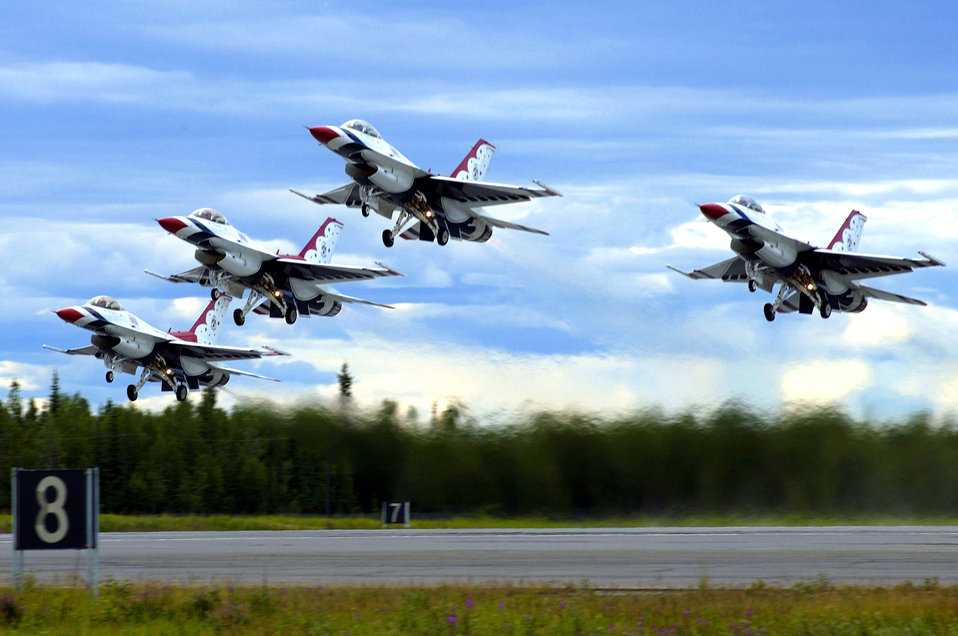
Diamond takeoff

NELLIS AIR FORCE BASE, Nev. -- The Thunderbirds aerial demonstration team begins the day with a diamond takeoff.